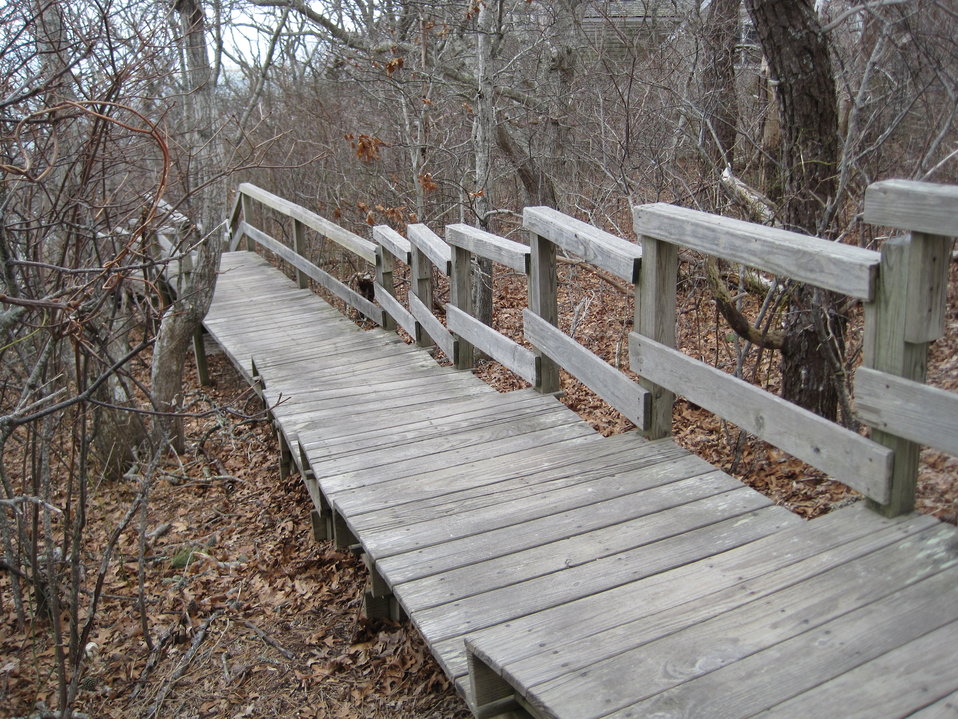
Morris Island Trail

This pathway leads from the refuge headquarters to the Morris Island Trail.

Credit: Keith Shannon/USFWS

Monomoy National Wildlife Refuge is part of the Eastern Massachusetts National Wildlife Refuge Complex.